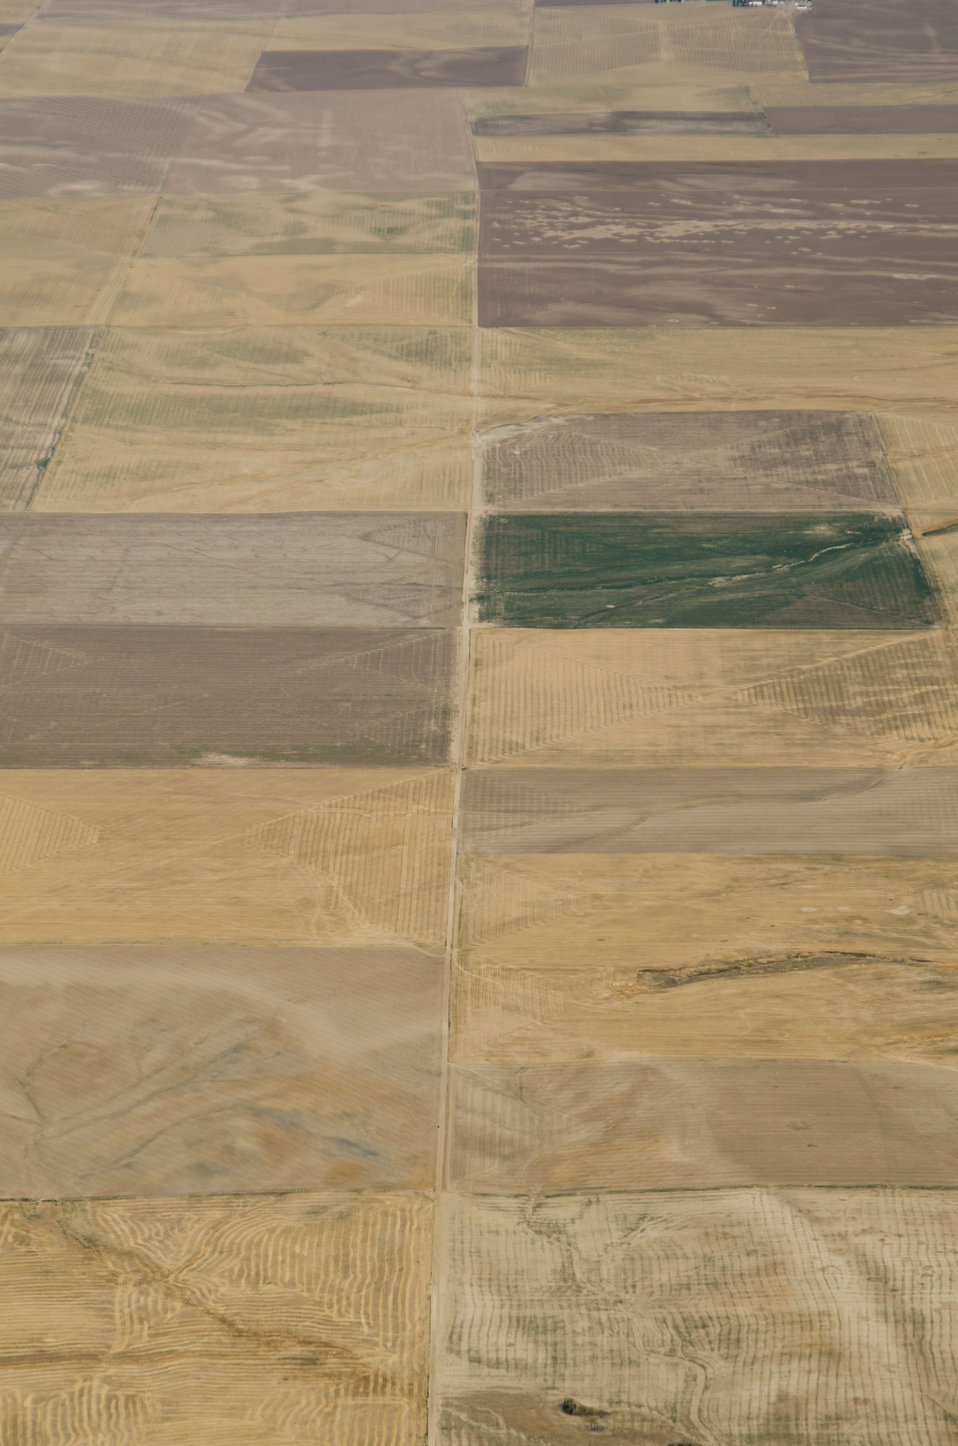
Aerial views of drought affected Colorado farm lands, 89 miles east of Denver, Colorado on Saturday, July 21, 2012. Green areas are irrigated, the yellow areas are dryland wheat crops.